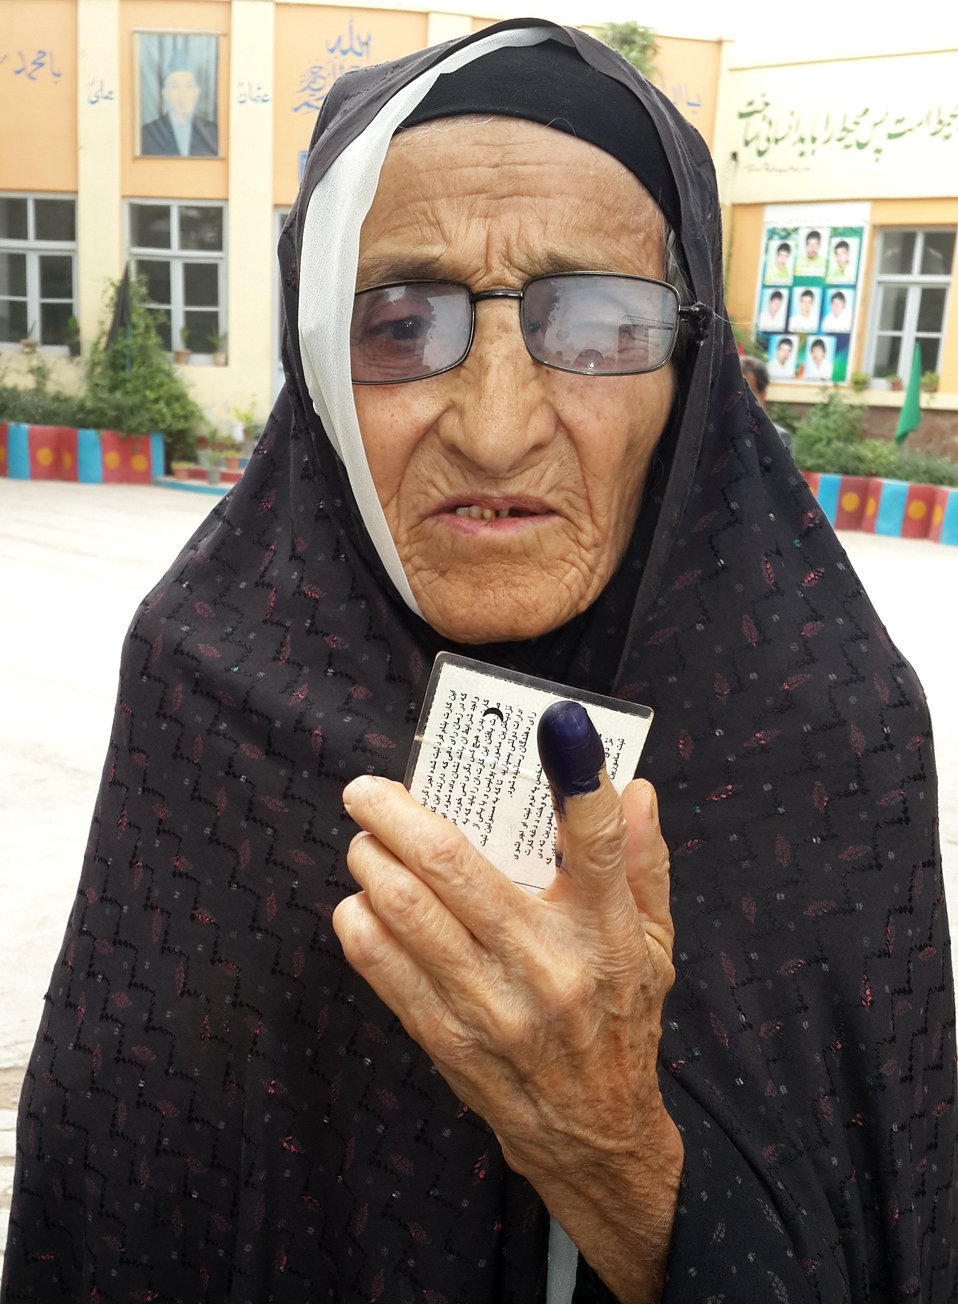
An elderly woman shows her coloured finger after casting her ballot in Herat.